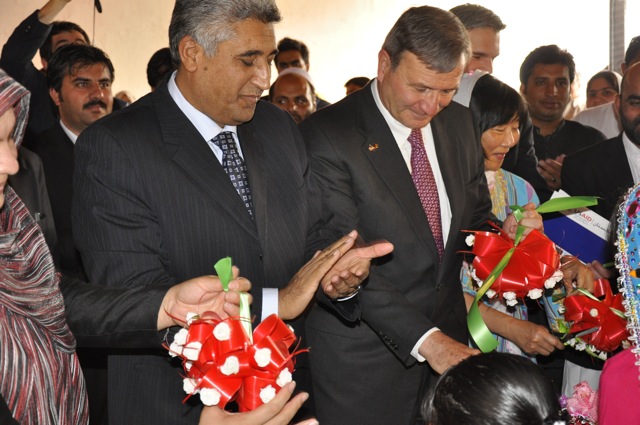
مرکز خدمات فارم زنان کابل دسترسی بیشتر به منابع و مواد را برای زنان کشاورز افغان فراهم خواهد نمود